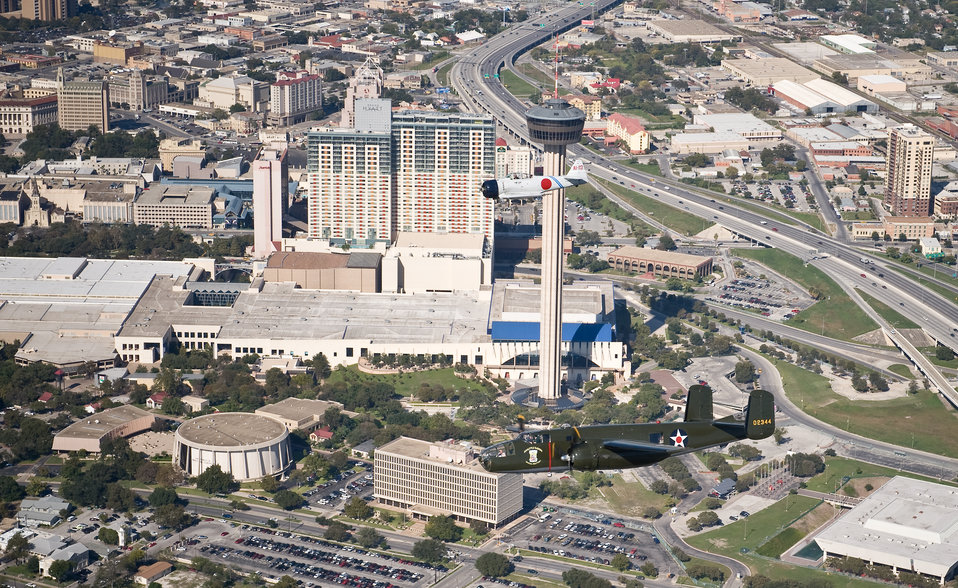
Warrior Flight